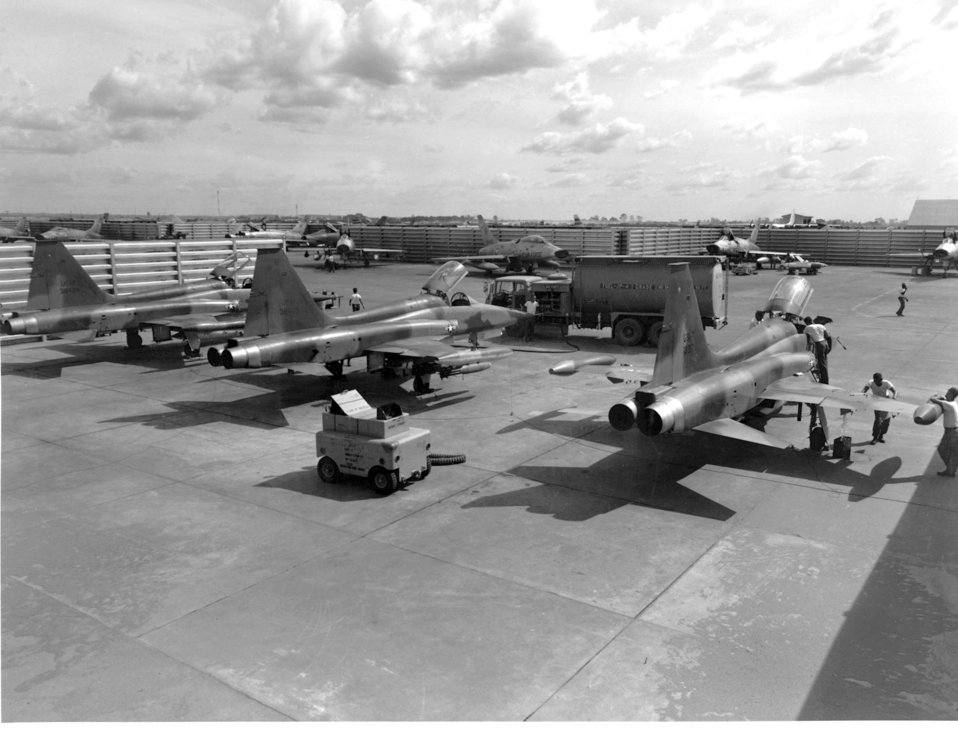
F-5A

1960s -- Three F-5A aircraft, armed with 750 pound bombs, are shown in the revetment area at Bien Hoa Air Base, South Vietnam, Jan. 31, 1966.